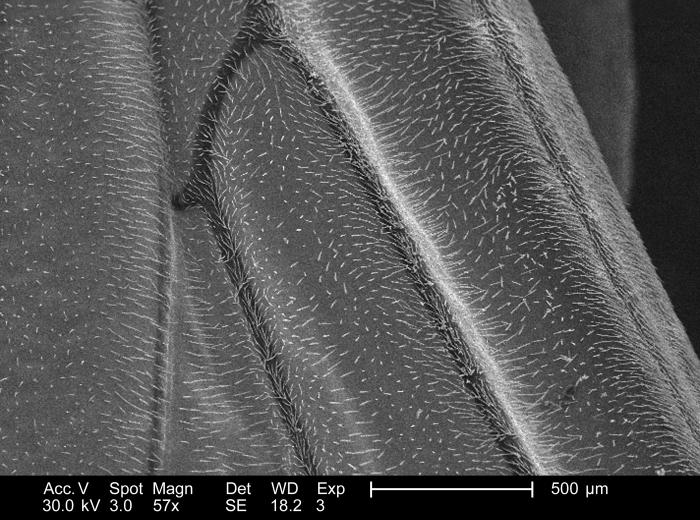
By magnifying this unidentified wasp's wing 57x this scanning electron micrograph (SEM) revealed that this wing's cuticular surface was coated with many, many sensorial 'hairs', know as 'setae'. These hairs are sensitive to changes in the organism's environment including changes in temperature, wind speed and direction, chemical variations, and changes to the physical make-up of its surroundings, i.e., tactile interaction. These setae, along with the insect's antennae, eyes, and wings offer the organism a detailed comprehensive depiction of its immediate environment.